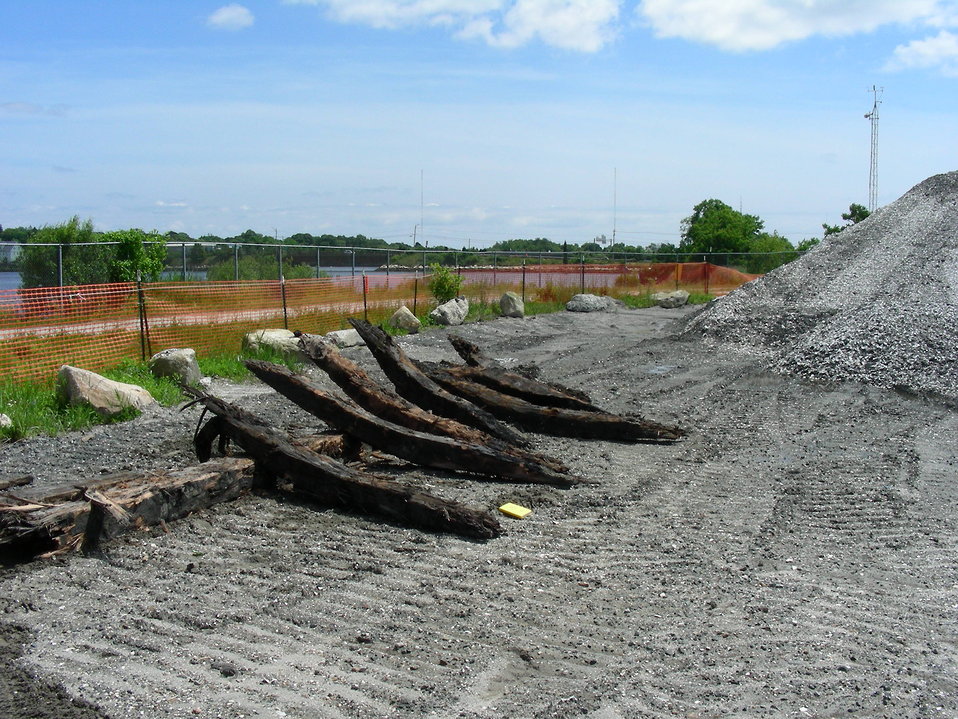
August 2009, Sunken vessel ribs